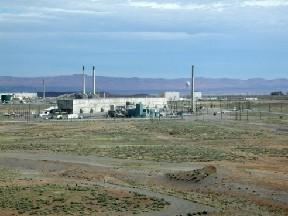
Hanford facilities

Ancillary facilities near the U Plant at the Hanford Site near Richland, WA. Deactivation and decommissioning activities have resulted in excess facilities being demolished.